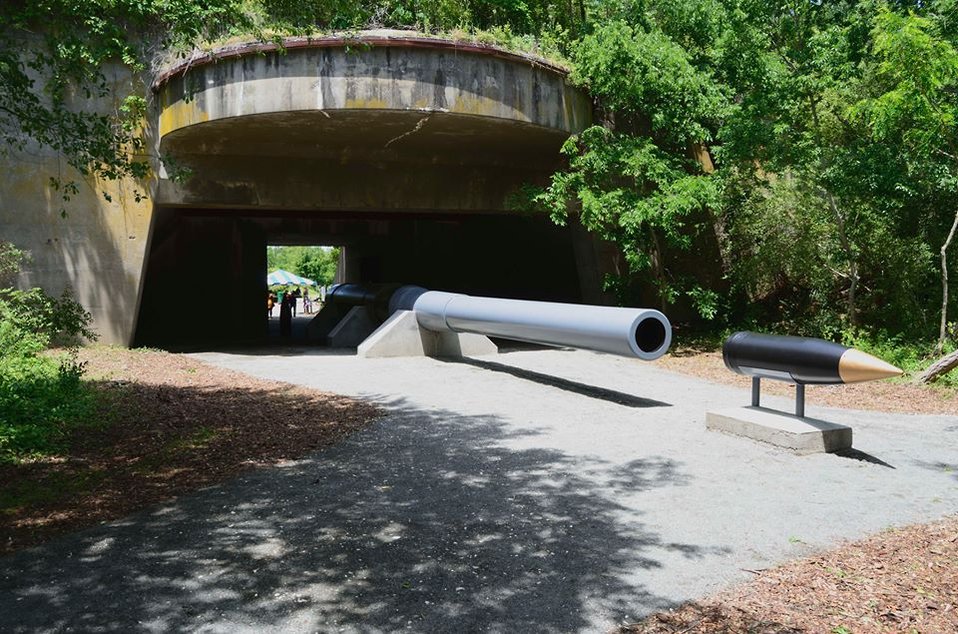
Photo of the Week - WW II Gun Barrel (VA)

Photo of the Week - 5/27/13

Eastern Shore of VA and Fisherman Island NWR became home to some military history this Memorial Day, a 68-foot, 120-ton gun barrel that was on board the USS Missouri when the Japanese surrended at the end of World War II. The refuge is one of many across the U.S. Fish and Wildlife Service that are former military bases. bit.ly/13Z2Tjt

On this day - and every day - as you pause to listen for the birds in the trees around you, also pause to give thanks to those who gave the ultimate sacrifice for our nation and freedom.